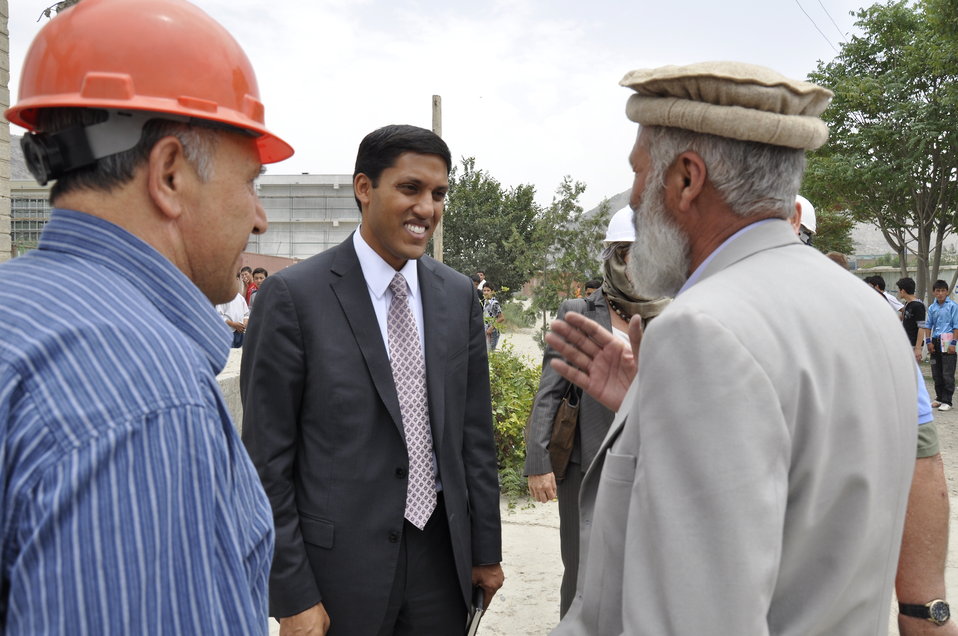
Ghazni High School in Kabul